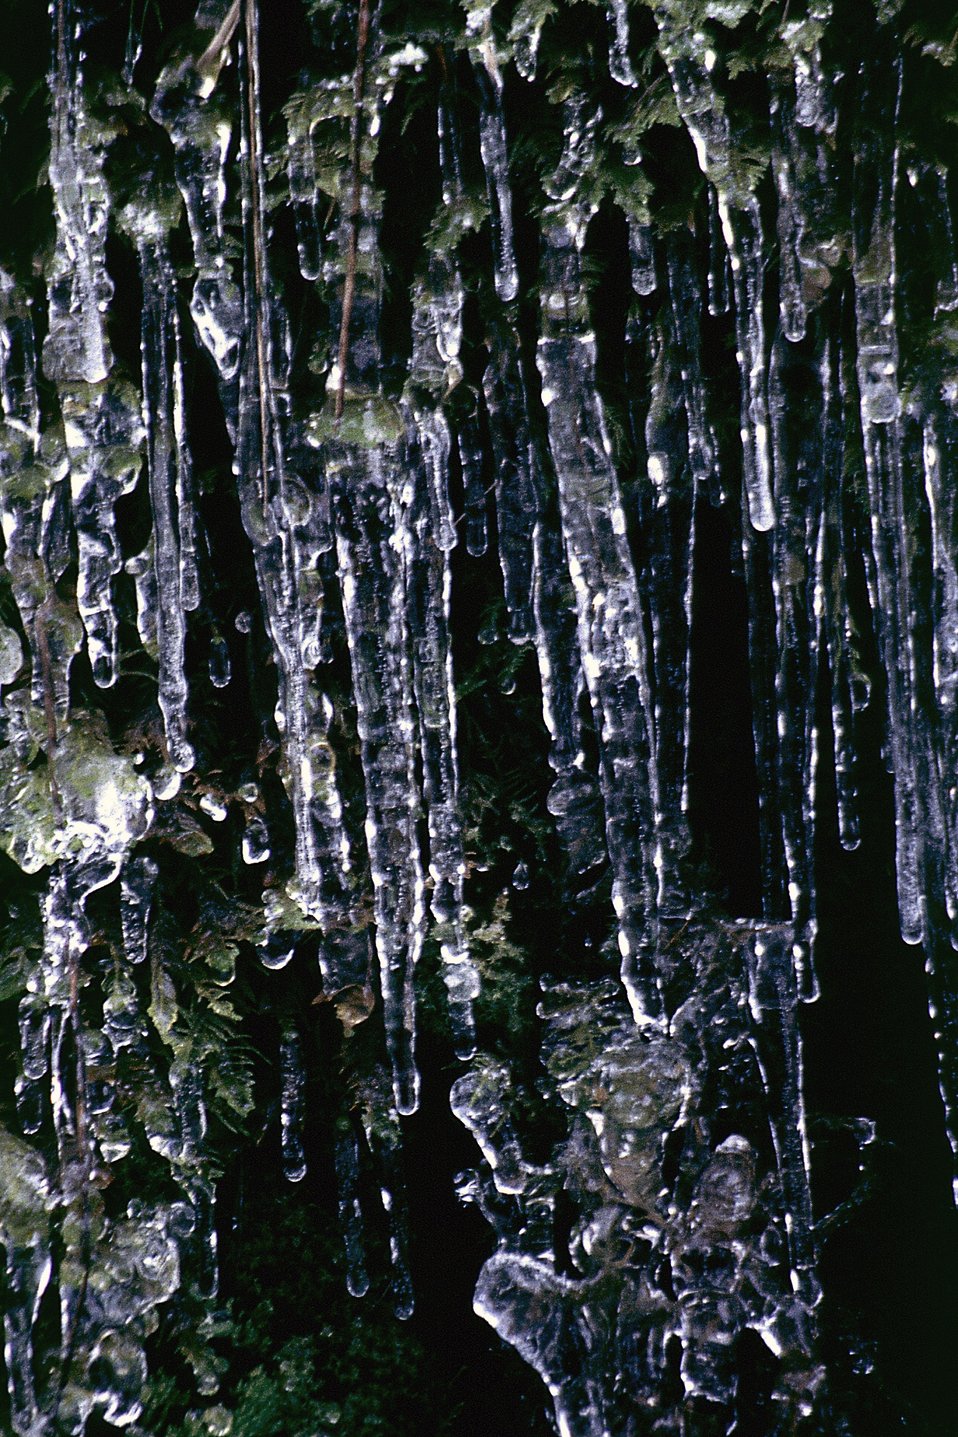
Mid Winter forest scene in the Mollala Corridor.